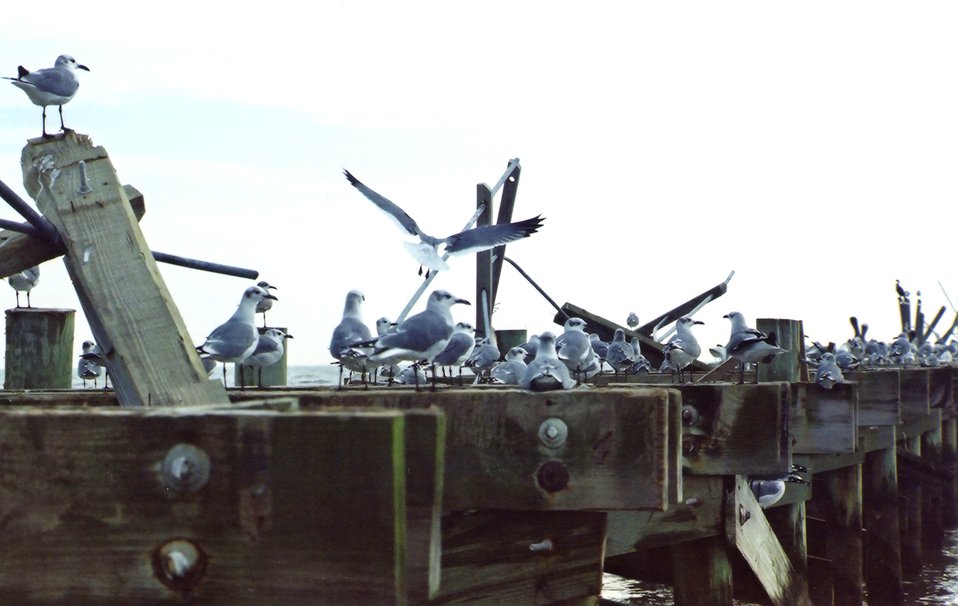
Seagulls on a hurricane-damaged pier.